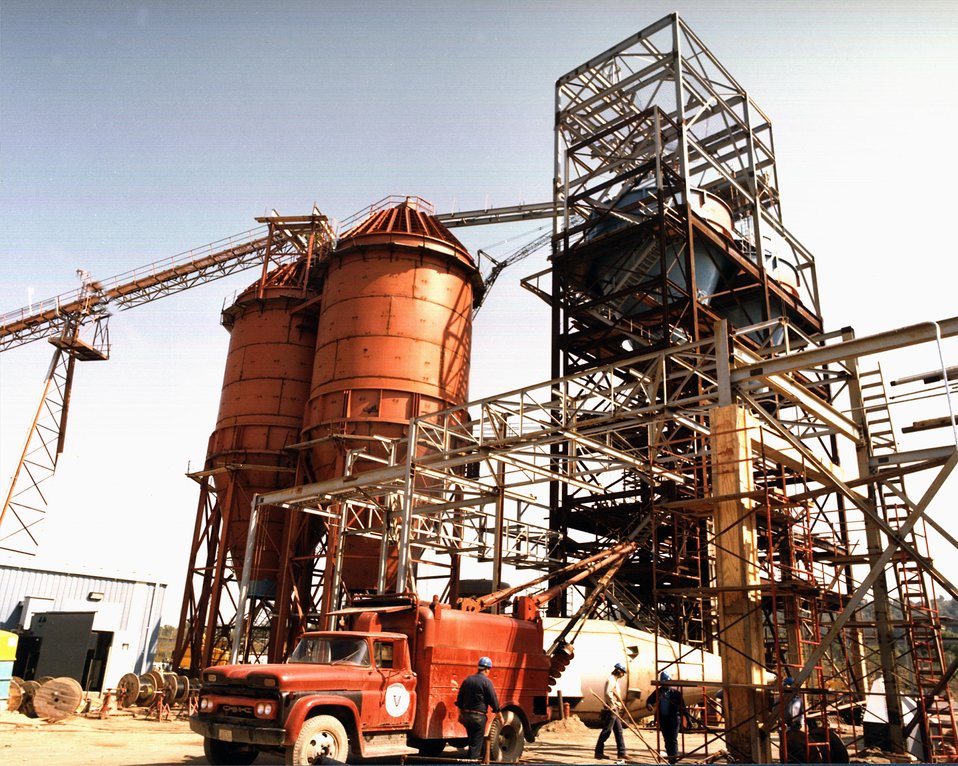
CRUSHED AND PULVERIZED COAL STORAGE BINS.